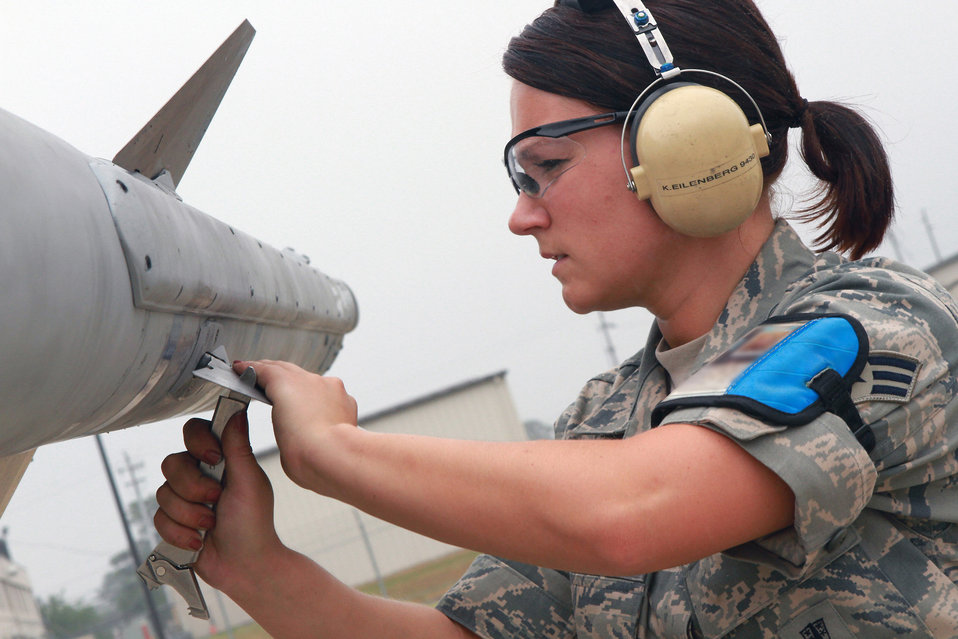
Weapons expert

Senior Airman Kelly Eilenberg installs a fin on an advanced medium-range air-to-air missile June 12, 2011, during an annual load crew competition at Egg Harbor Township, N.J. Airman Eilenberg is a weapons loader assigned to the New Jersey Air National Guard's 177th Fighter Wing.